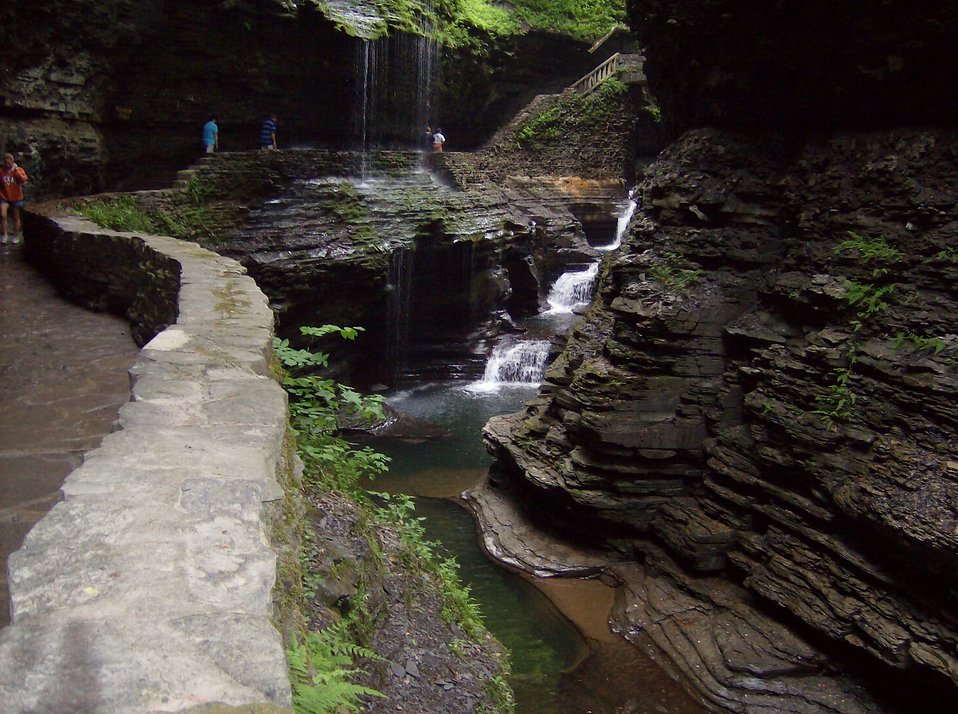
Stream, waterfall, pools, and lush green foliage at Watkins Glen State Park.